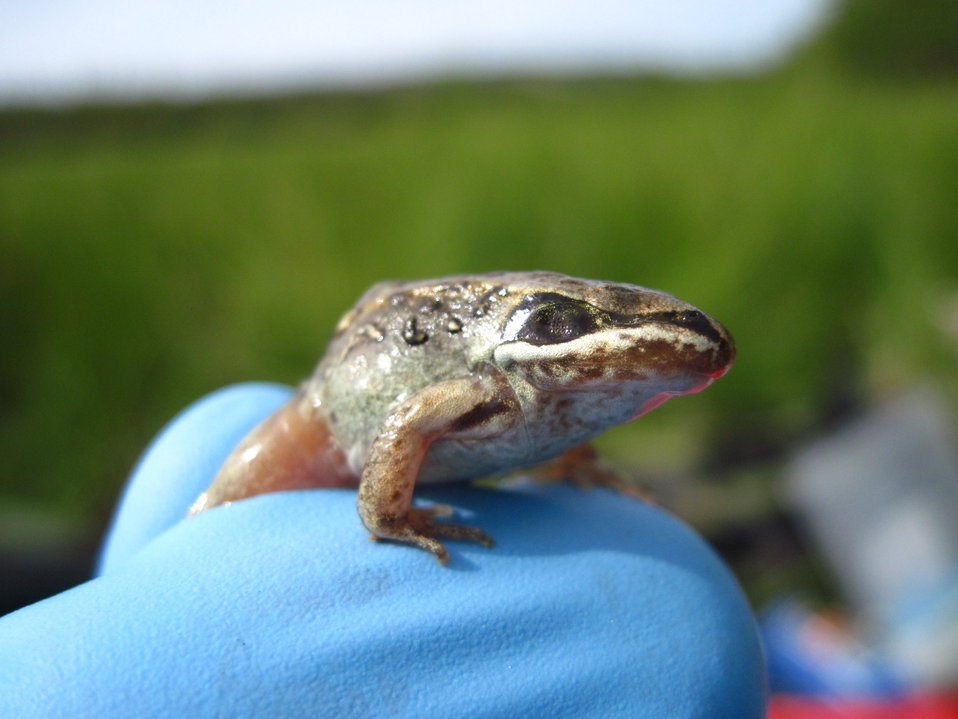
Wood frog with missing eye.

(Mari Reeves/USFWS) Location: Arctic NWR, AK